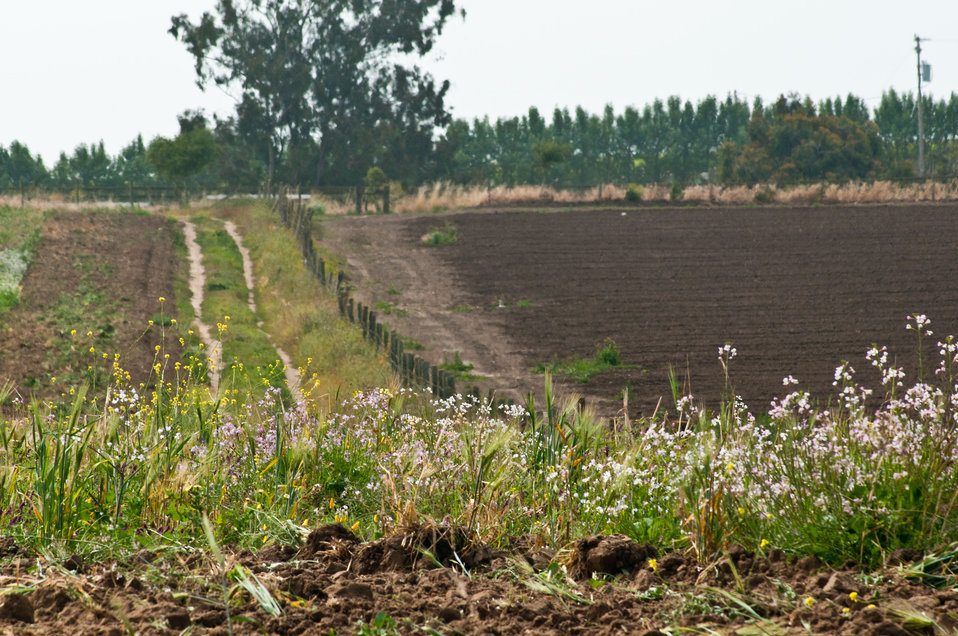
Cover crop (foreground) at Leafy Greens, operated by farmer Tom Heess, in the Salinas Valley, California on Thursday, June 16, 2011. Leafy Greens grows row crops of lettuce, broccoli, cauliflower sweet peas and seed beans. He uses rotational crop plantings to control weeds and plant disease. When a plot of land is at rest, he plants a cover crop of barley and rye grass because the roots hold the topsoil reducing erosion of the soil. He is converting his irrigation system from conventional sprinklers to micro irrigation. Where one system produces runoff and erosion of the soil; the other has little or no erosion, less maintenance, easy harvest and less water is needed. When seasonal rains produce runoff, the silt that flows with it is caught in sediment ponds. The ponds have grass, bushes and trees to hold the structure and allow the silt to settle. Spillways lead to holding ponds and eventually the Salinas River, a tributary of the Monterey Bay National Marine Sanctuary. So far, because of its design and efficiency, no water has made it to the river.